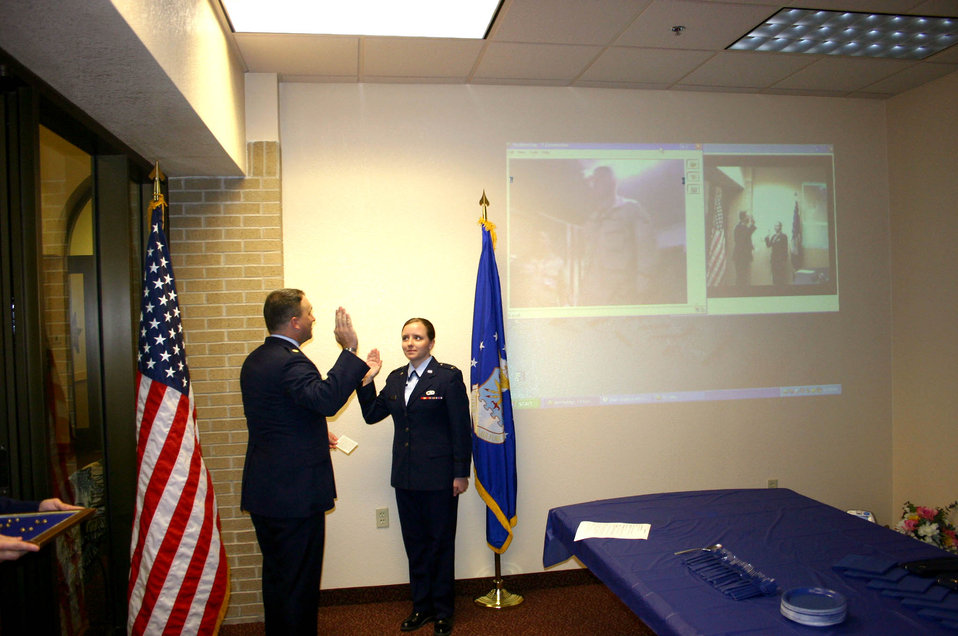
Promotion takes to airwaves

LAUGHLIN AIR FORCE BASE, Texas -- Maj. Gary Barlet administers the oath of office to 1st Lts. Eric and Sheila Johnston during their promotion ceremony via video conference May 26. She is assigned to the 47th Flying Training Wing's public affairs office here, and her husband is deployed to Balad Air Base, Iraq. Major Barlet is the 47th Communications Squadron commander.